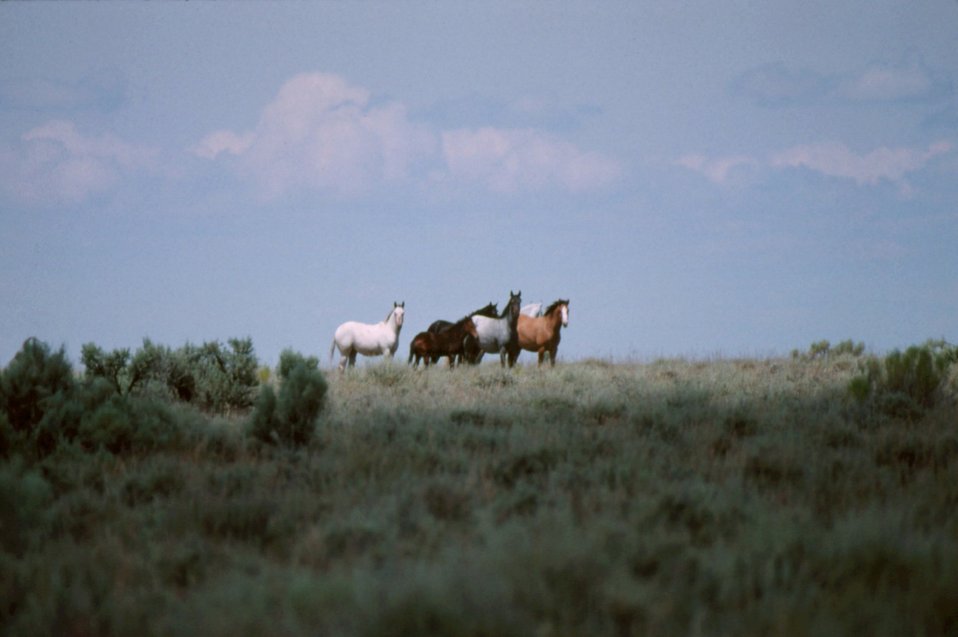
Warm Springs Wild Horse Management Heard Area.